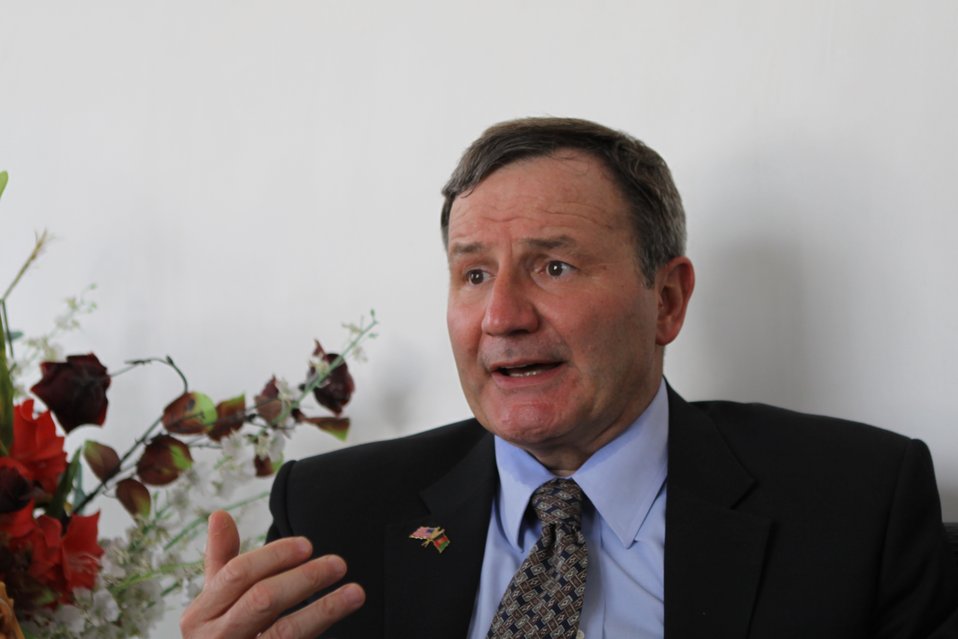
100525 Hirat Marble Conference 872